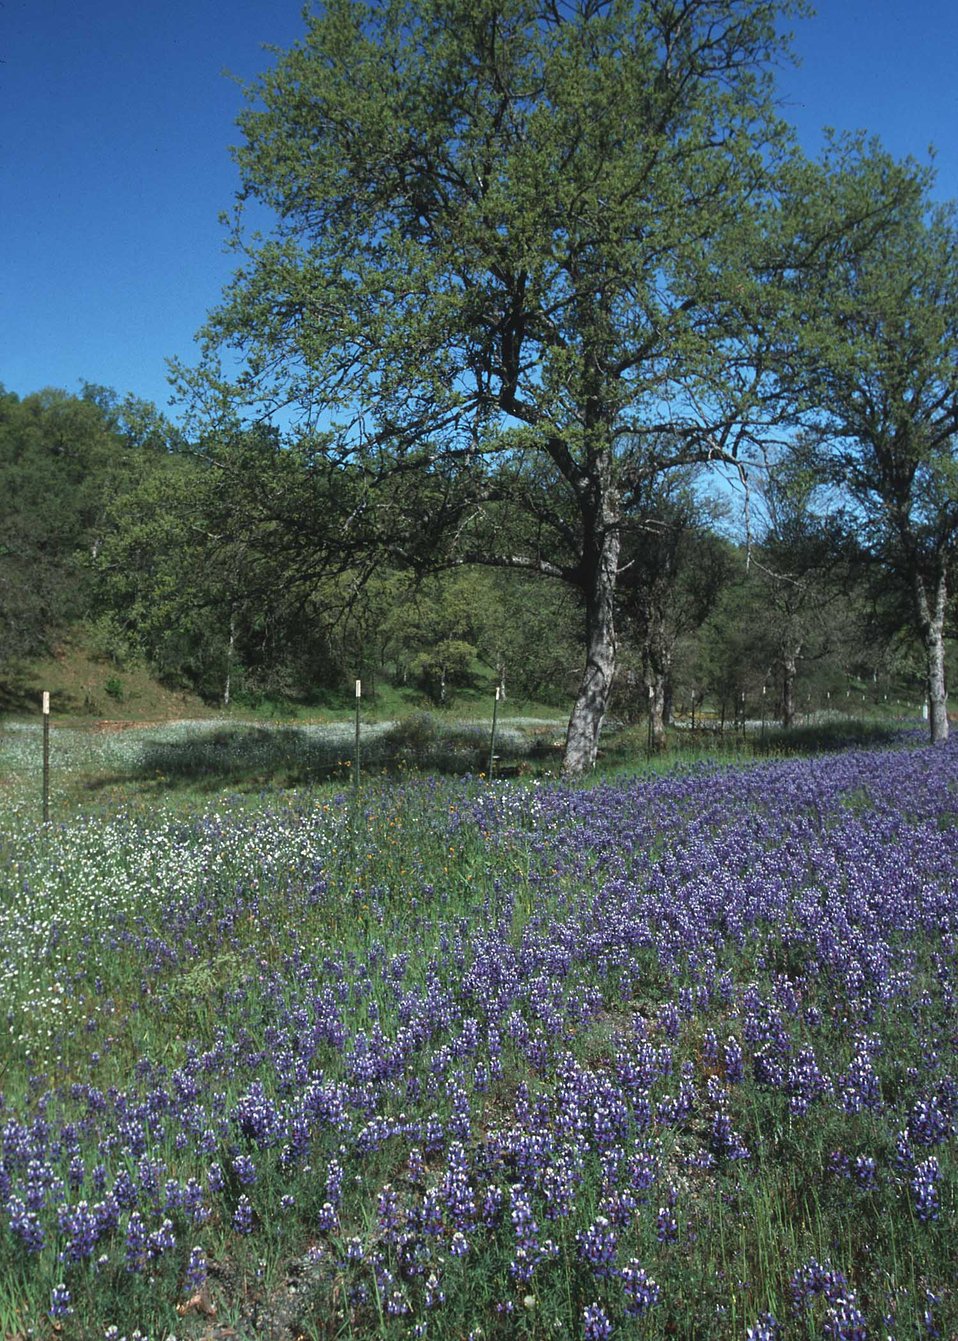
Open spaces provide habitat for wildlife and add beauty to the countryside in this northern California area.